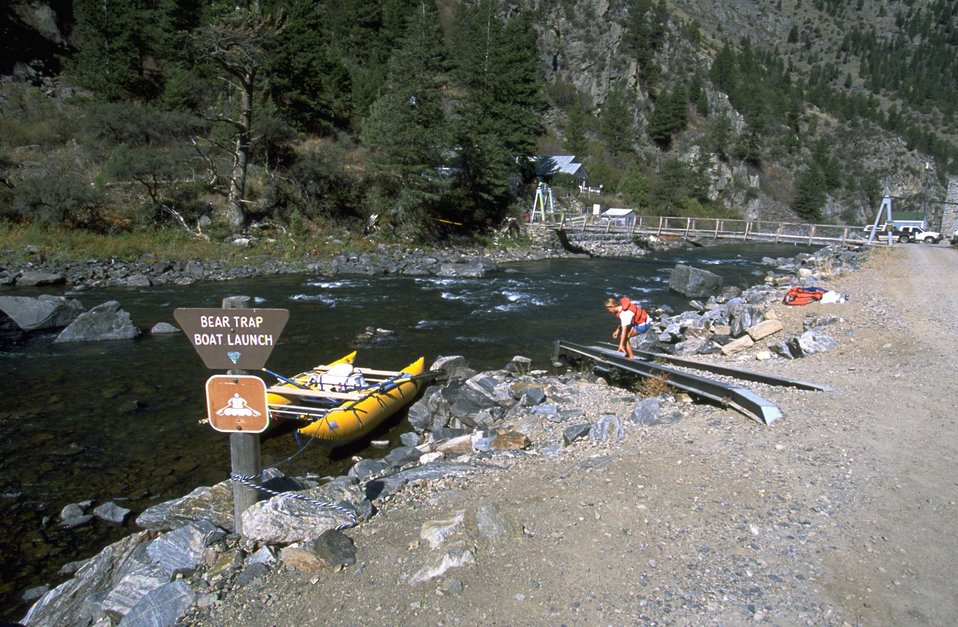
Boat Launch at the Madison - a Cataraft is in the water